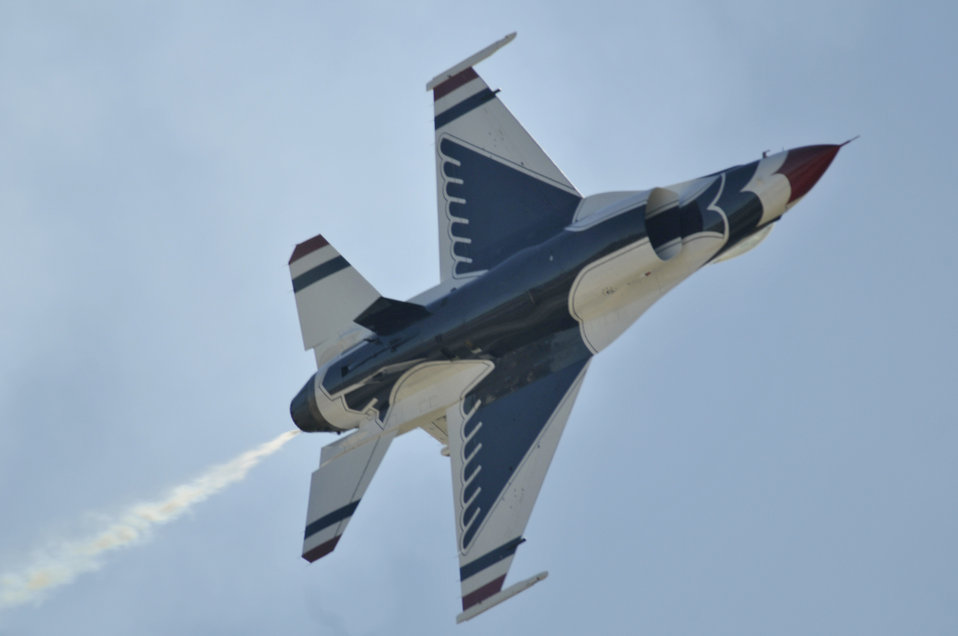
AirFest 2010

The U.S. Air Force air demonstration team, the Thunderbirds, perform precision aerial maneuvers Nov. 6, 2010, during AirFest 2010 at Lackland Air Force Base, Texas.